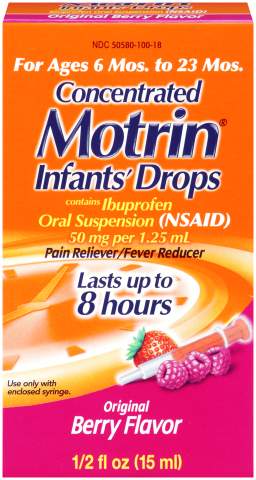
RECALLED – Infants’ Drops Original Berry Flavor 1/2 fl oz bottles

September 6, 2013 – Product Recall – McNeil Consumer Healthcare Announces Voluntary Recall of Three Lots of Concentrated MOTRIN Infants Drops Original Berry Flavor 1/2 fl oz.